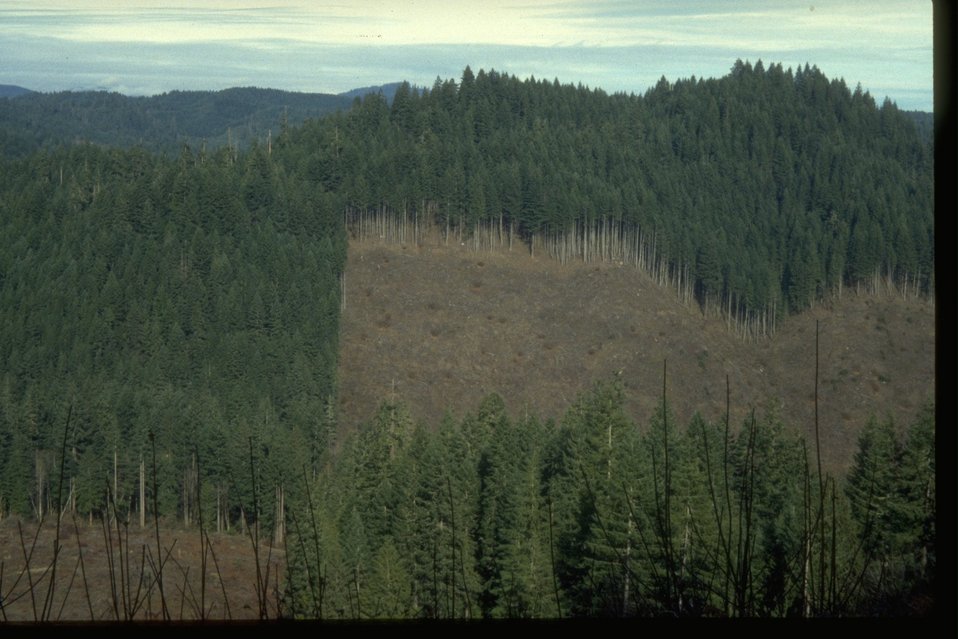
Clearcut site in Western Oregon.